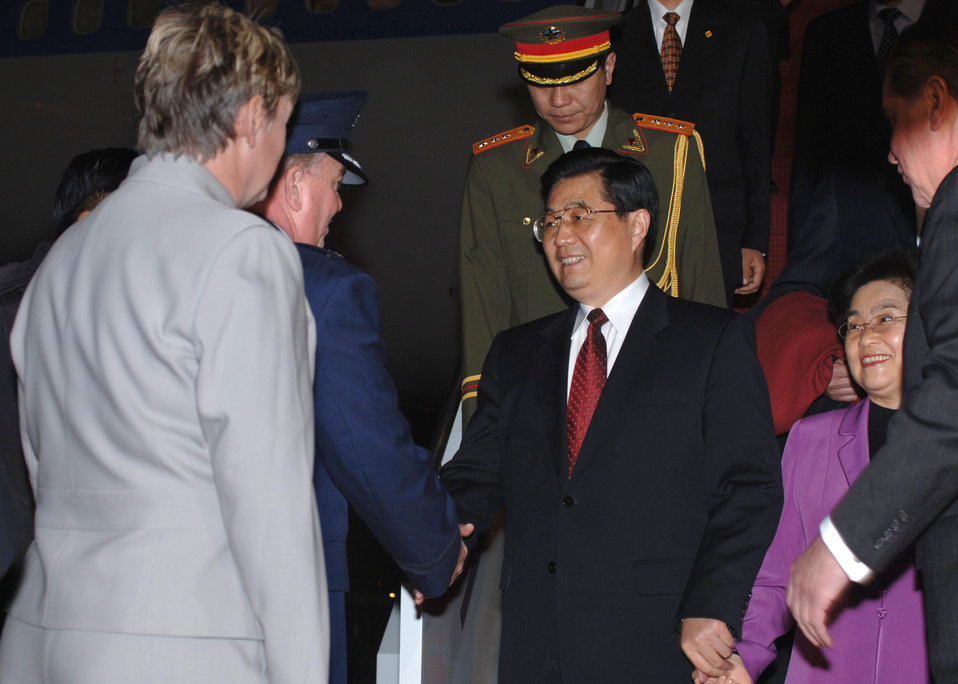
China's president visits U.S.

President Hu Jintao of China is greeted by Brig. Gen. Thomas Travis, 89th Medical Group commander, as he arrives at Andrews Air Force Base, Md., Thursday, April 19, 2006.